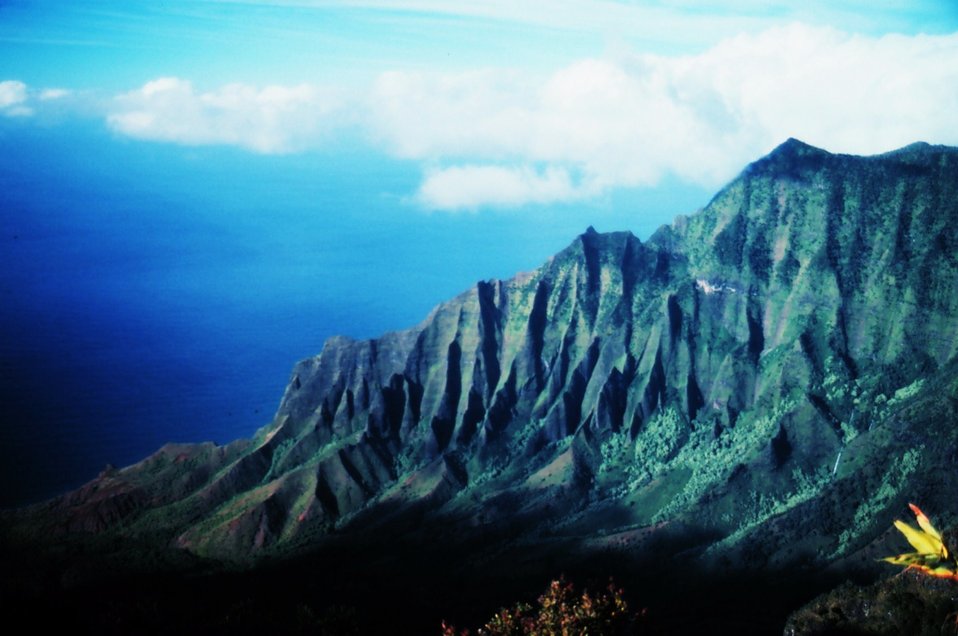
A knife-edge ridge on Kauai on the Na Pali coast. The ridge looms over the Kalalau Valley which is veiled in shadows in the lower fourth of the picture.